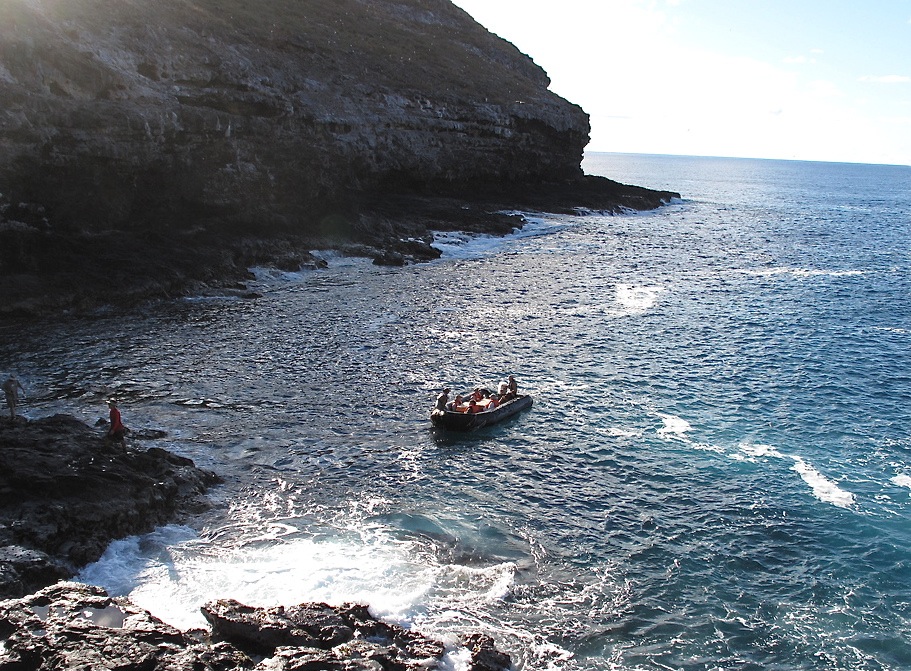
Leaving Nihoa Island with millerbirds, enroute to M/V Searcher and Laysan Island
Sept. 6, 2011